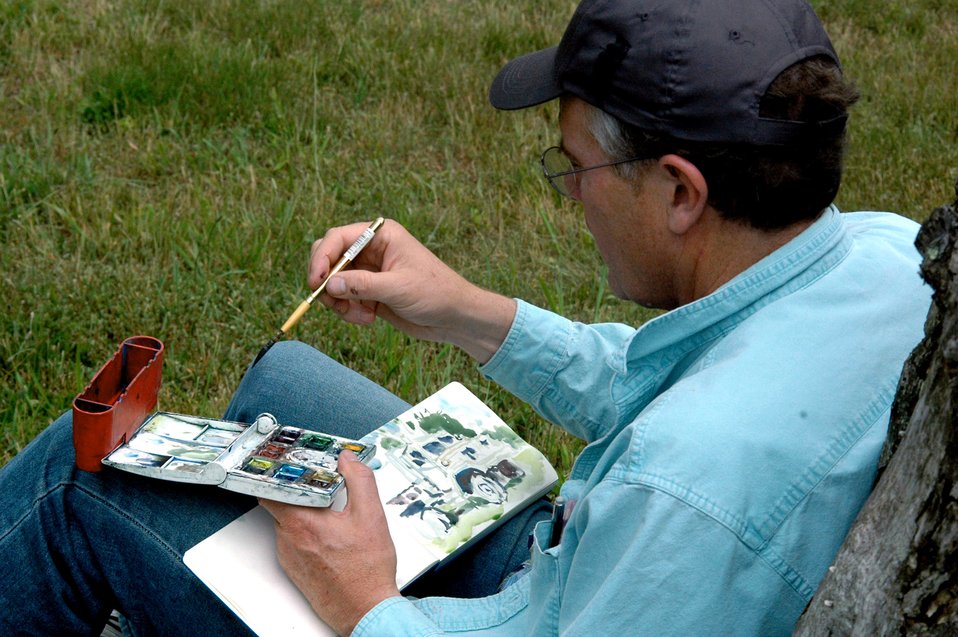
Air Force Art Program artists visit USAF EC

Artist John Finger of Walnut Creek, Calif., paints a scene during a visit to a Fort Dix, N.J., range to document the Air Force Phoenix Warrior Training Course for the Air Force Art Program June 20. He was one of five artists visiting the U.S. Air Force Expeditionary Center and its courses to create future works of art for the program.